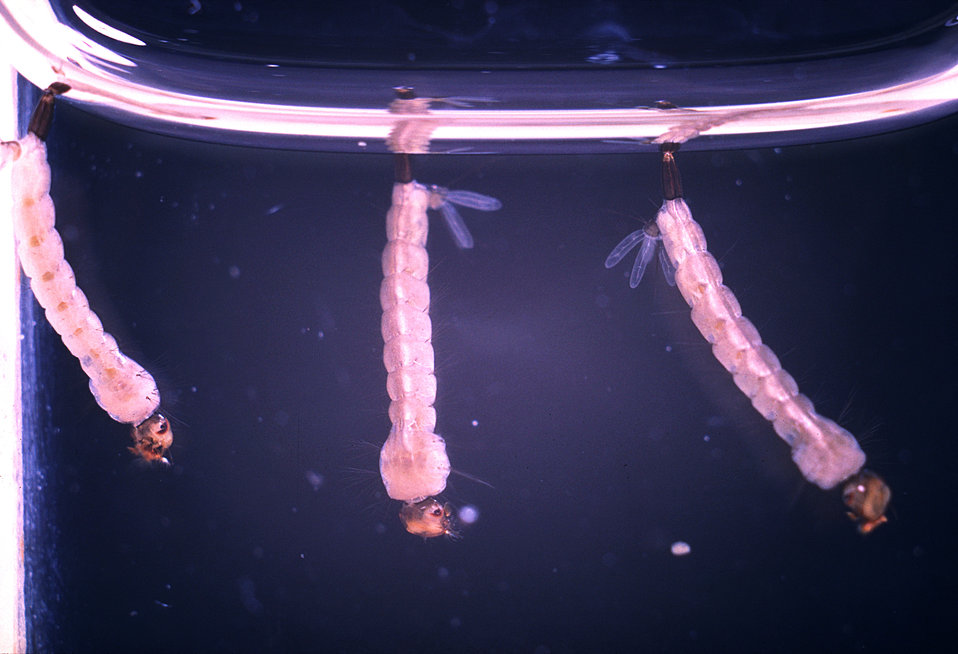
Closeup of Aedes aegypti mosquito fourth stage larvae, side view.